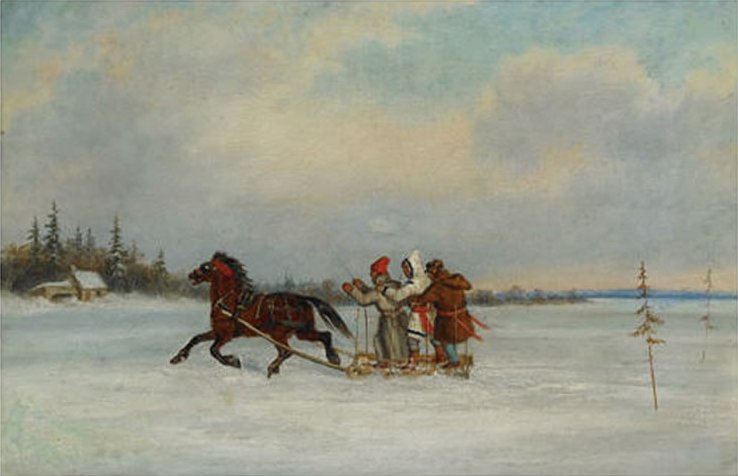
Habitants with Sleigh, oil painting by Cornelius Krieghoff, 11.5 x 17.5 in.